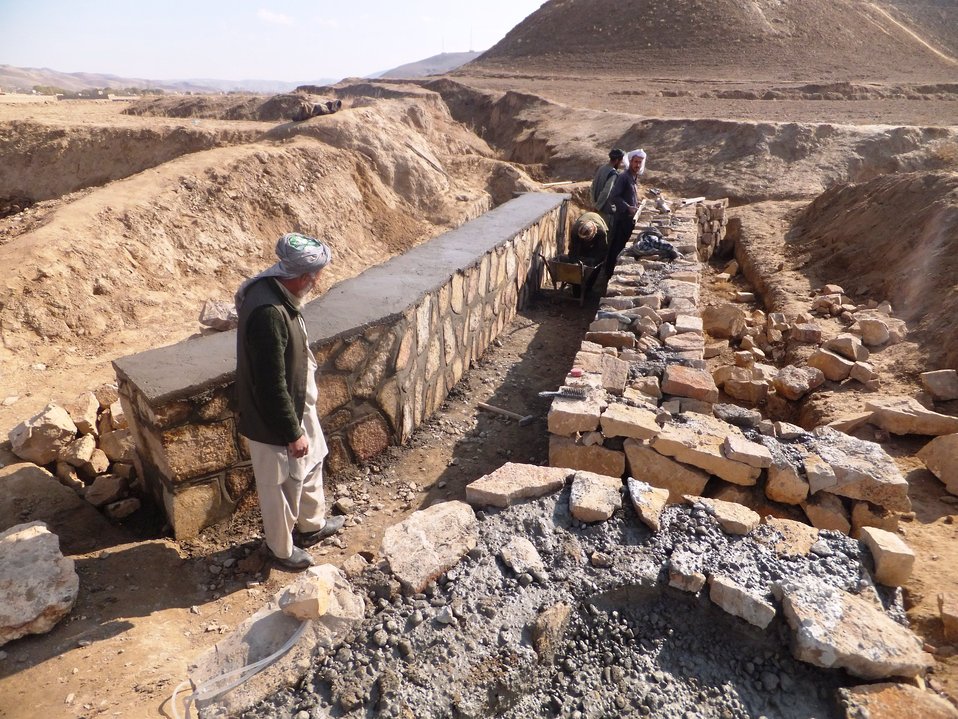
Laborers working to construct a culvert in Zadsaleh village in Qadis District